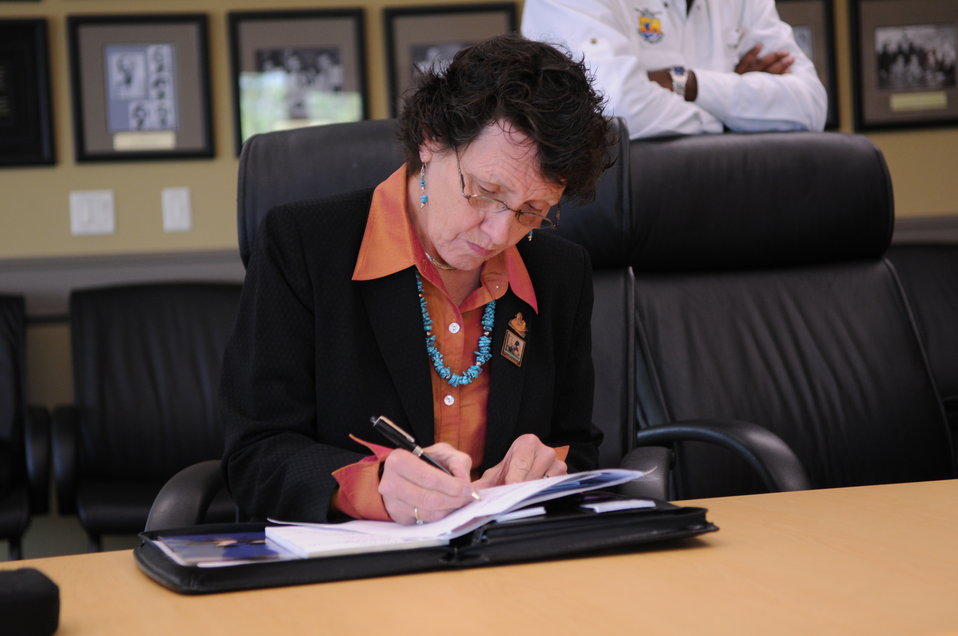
Judging

The U.S. Fish & Wildlife Service sponsored the 2012 Federal Duck Stamp Art Contest September 28 and 29 in Ogden, Utah, at Weber State University. A panel of five judges was responsible for choosing the art work used to design the 2013-2014 Migratory Bird Hunting and Conservation Stamp.